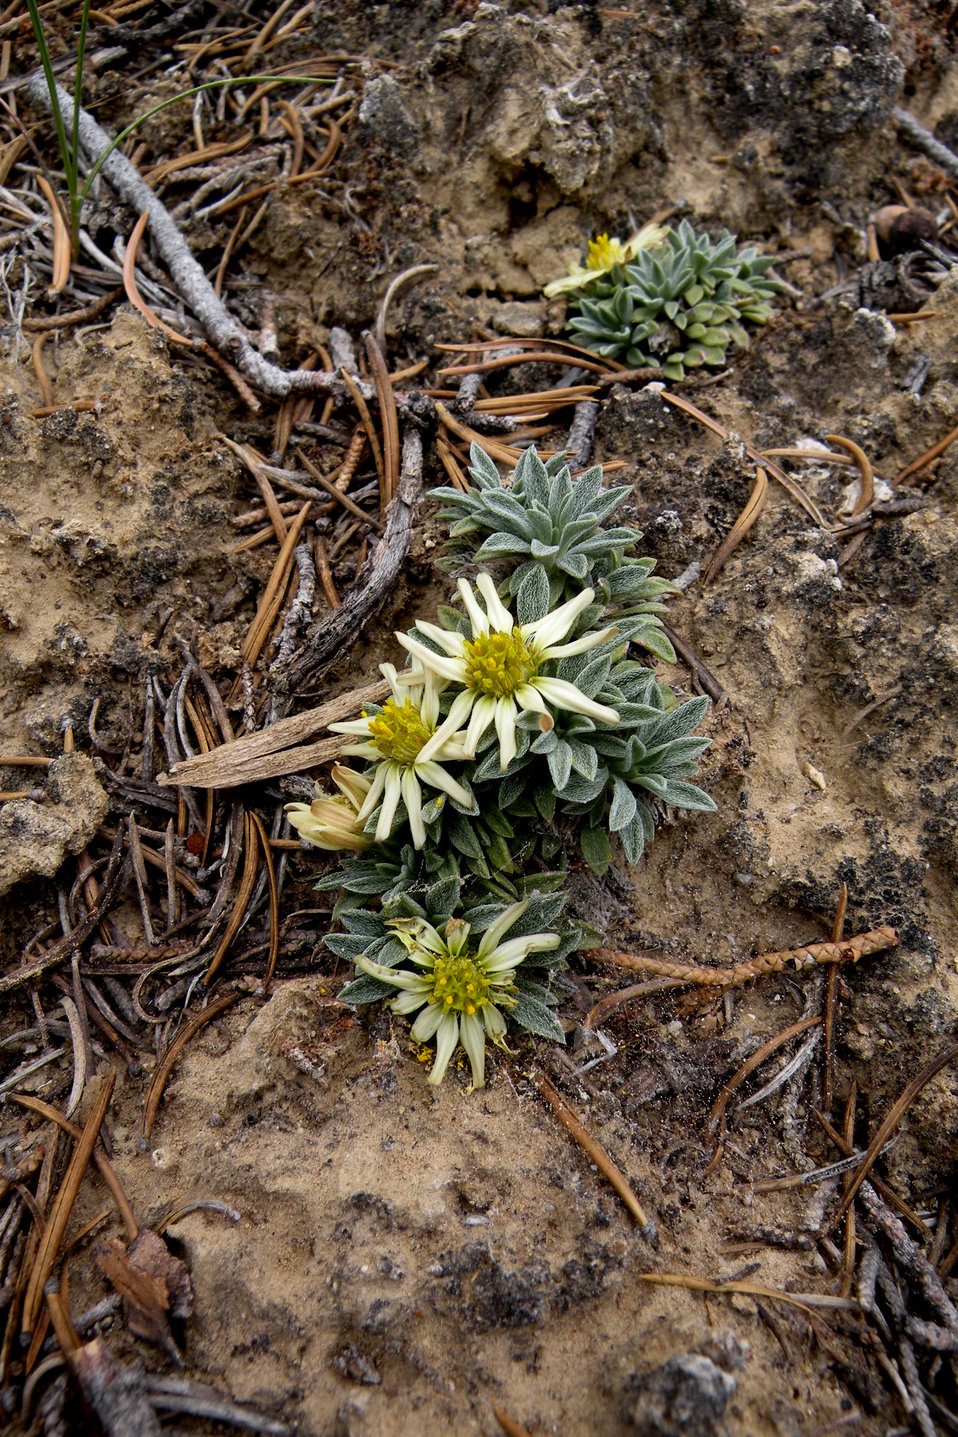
Last Chance townsendia (Townsendia aprica) is a diminutive perennial herb in the sunflower family. It is endemic to central Utah where it occurs in Emery, Sevier, and Wayne counties. The species is associated with piñon-juniper and grassland communities between 6,100 and 8,000 feet in elevation. Habitat loss, degradation, and fragmentation are the largest threats this species faces today. Sources of these threats include coal mining, road developments, recreational off-road vehicle use, and grazing. It was listed threatened in 1985.